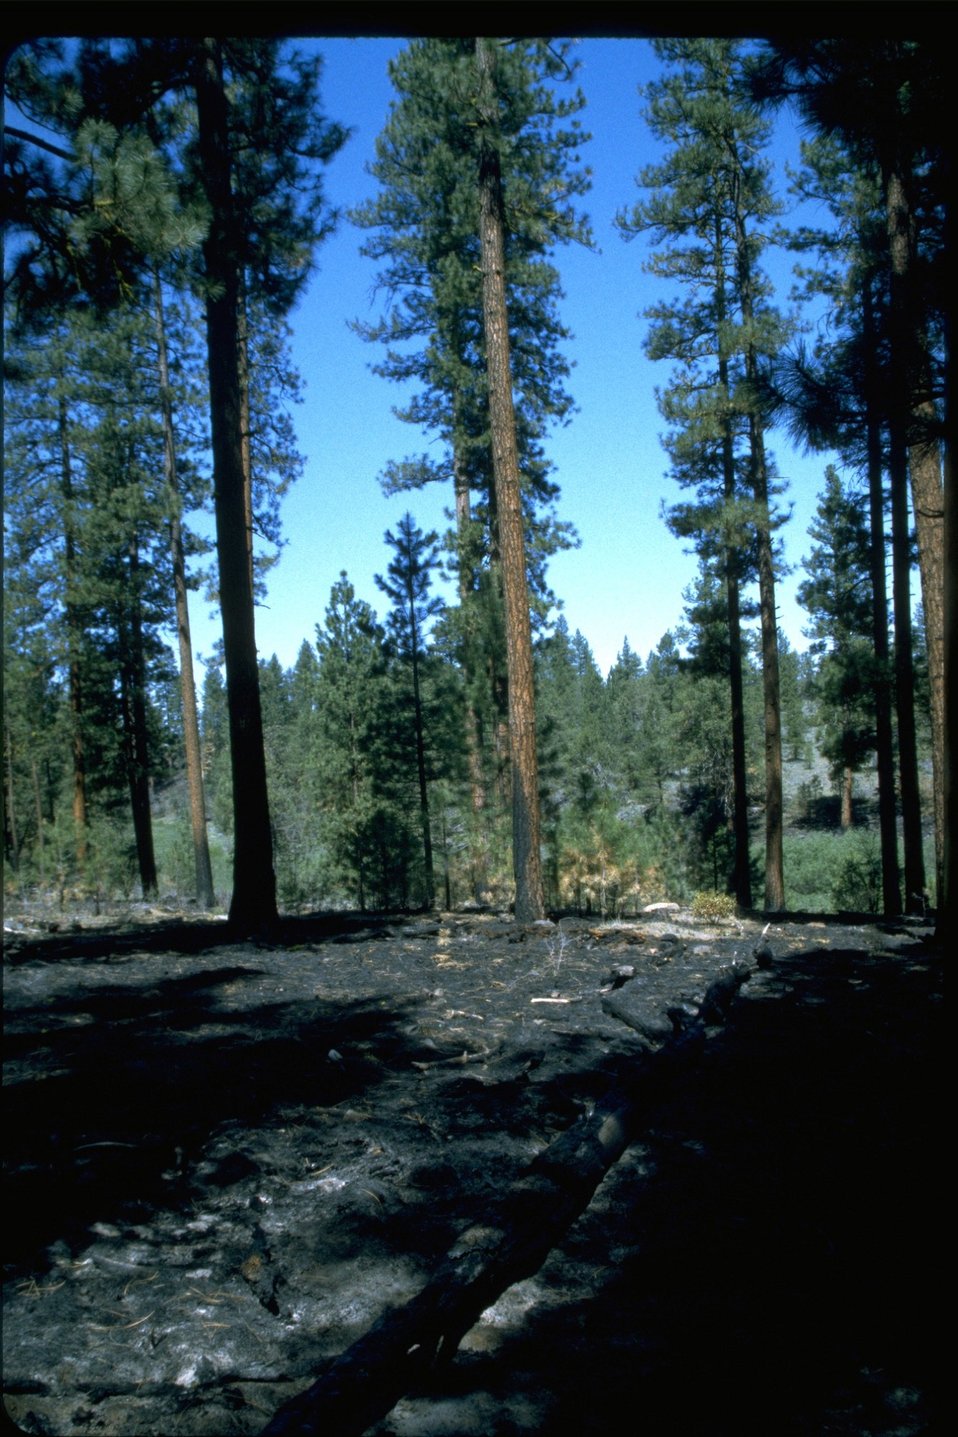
Prescribed burn area CCC (Civilian Conservation Corps) road near Barnes Valley.